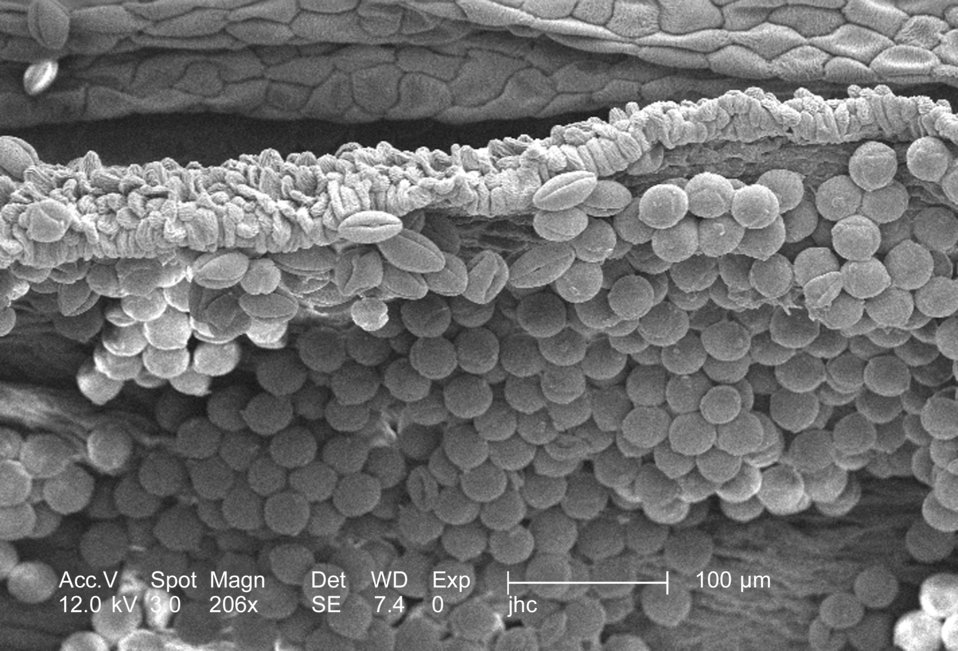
Under a magnification of 206x, this scanning electron micrograph (SEM) revealed some of the morphologic ultrastructure found amongst a collection of pollen found within the dehisced, or split open, anther of a yellow "Fireworks" sundrops, Oenothera fruticosa flower. Note the pod-like configuration of the anther, within which reside many pollen grains ready for dissemination into the passing wind, or to become attached to a pollinator such as a bee. Judging by the shape of these pollen grains, it appears that the majority had yet to dry, for the elliptical, "football"-shaped grain, closer to the lip of the anther, represented those that had dried, and the round grains represented those that were still moist.